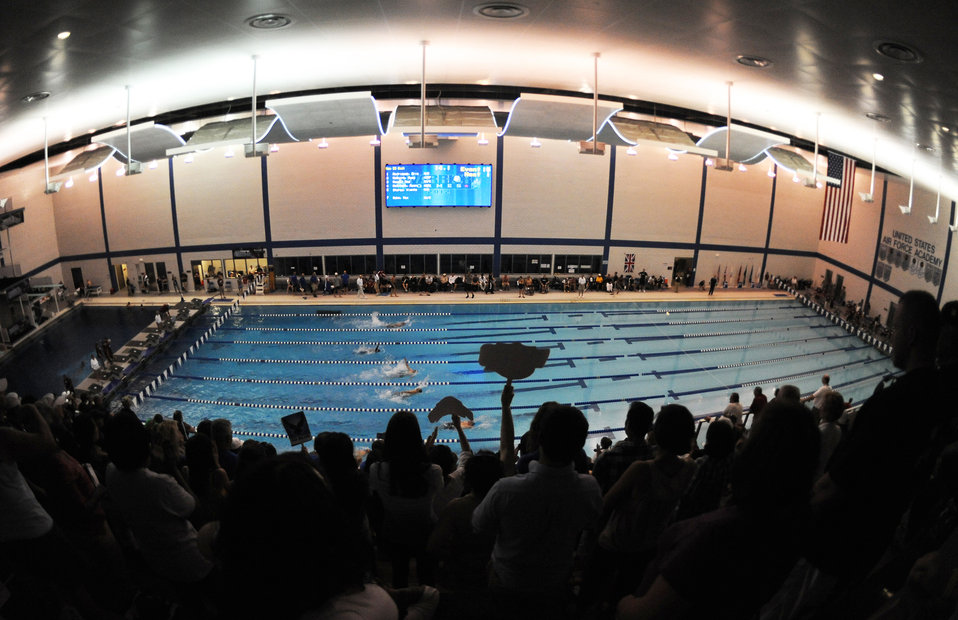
Warrior Games

The crowd cheer as athletes take part in a swimming competition during Warrior Games 2012 at the U.S. Air Force Academy in Colorado Springs, Colo., May 5, 2012.